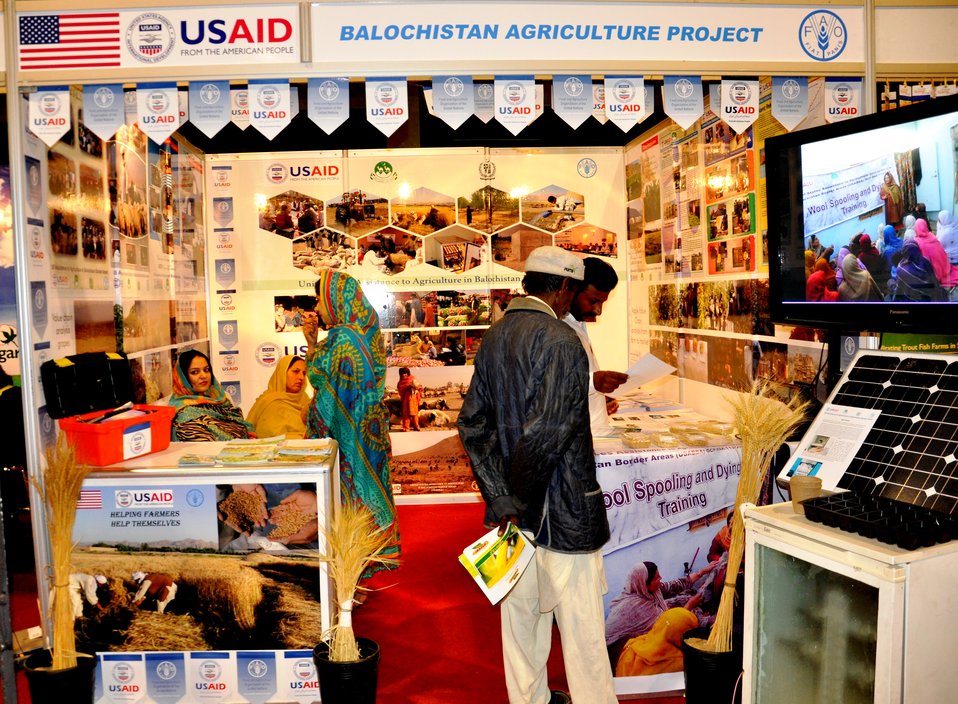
Balochistan Agriculture Project